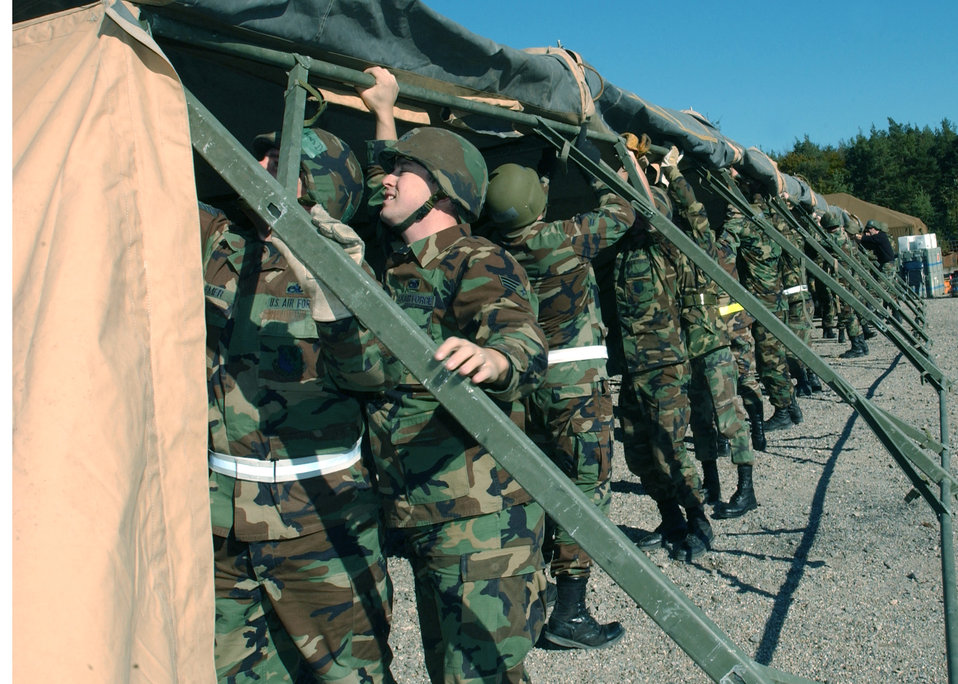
Silver Flag

RAMSTEIN AIR BASE, Germany -- Airmen of the 31st Communications Squadron put up a tent in a simulated deployed location during a portion of the Silver Flag exercise here. The exercise, which ended Oct. 19, provided more than 250 U.S. Air Forces in Europe airmen from several specialties with realistic contingency-operations training. Previous exercises included only civil engineer and services airmen.